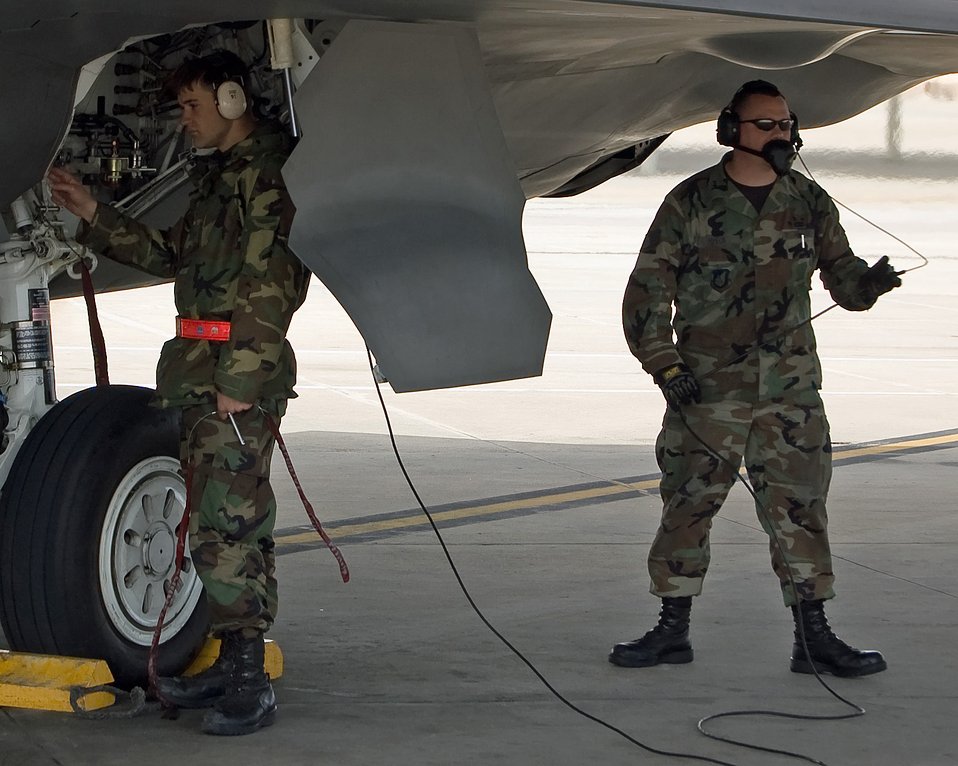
Elmendorf Airmen complete first F-22 deployment

Airman 1st Class Shawn Krause and Staff Sgt. Justin Speak prepare to launch an F-22 Raptor Feb. 4 at Tyndall Air Force Base, Fla. Members of the 3rd Wing and Air Force Reserve Command's 477th Fighter Group from Elmendorf AFB, Alaska, combined for its first F-22 Raptor deployment to Tyndall AFB for Combat Archer. The 132 Reserve and active-duty Airmen and eight F-22s from Alaska were in Florida for Weapons System Evaluation Program training. Colonel Shower is the 90th Fighter Squadron commander. Airman Krause and Sergeant Speak are 90th Aircraft Maintenance Unit crew chiefs.